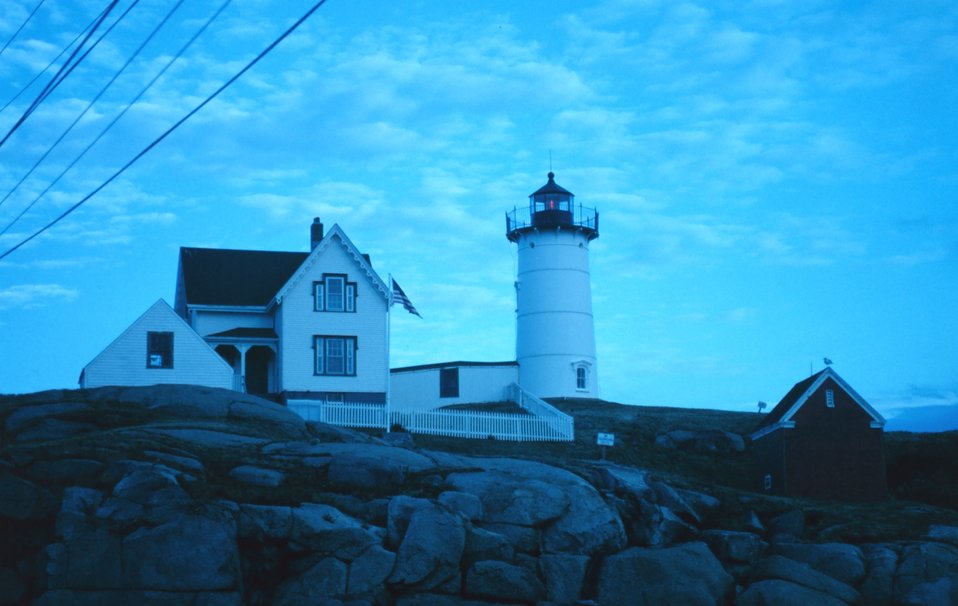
Nubble Lighthouse